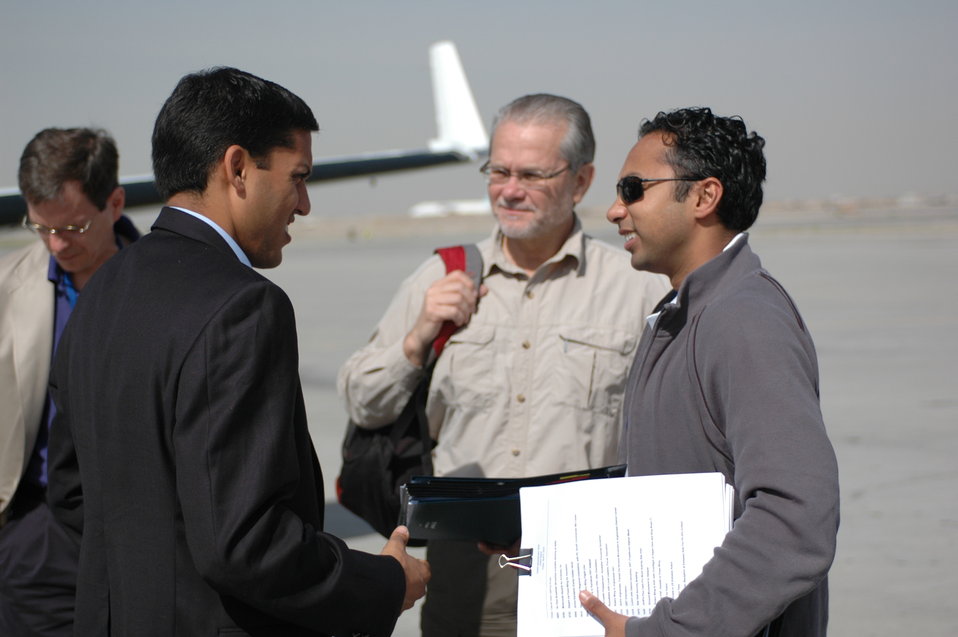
Dr Shah Visits Kandahar April 9, 2010